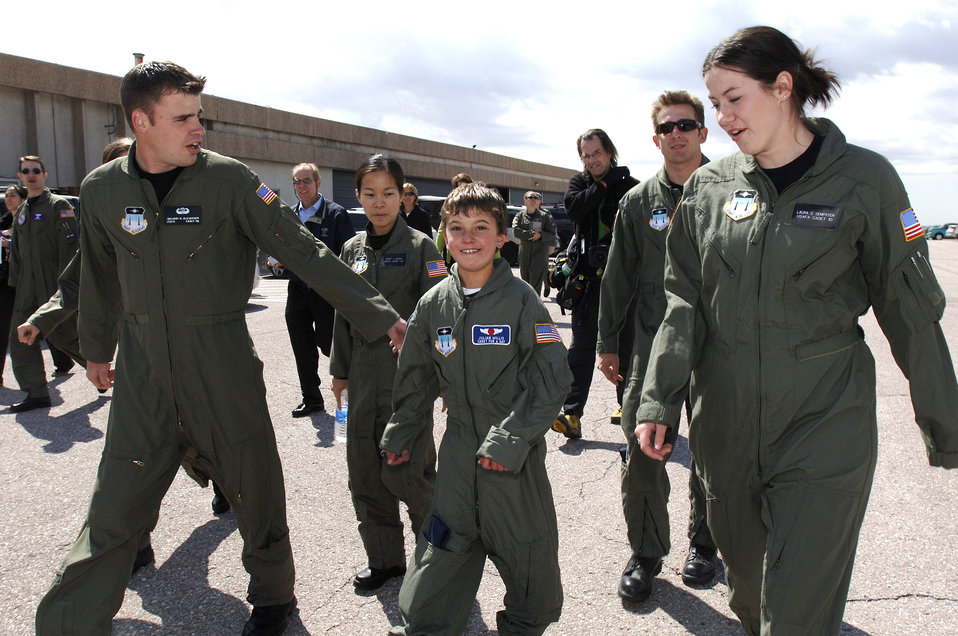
Academy honors 'Cadet for a Day' in Colorado

Ten-year-old Julian Willis walks out to the parachute landing zone during his three-day visit to the U.S. Air Force Academy, Colo. The Make-a-Wish Foundation and the Air Force Academy made Julian a